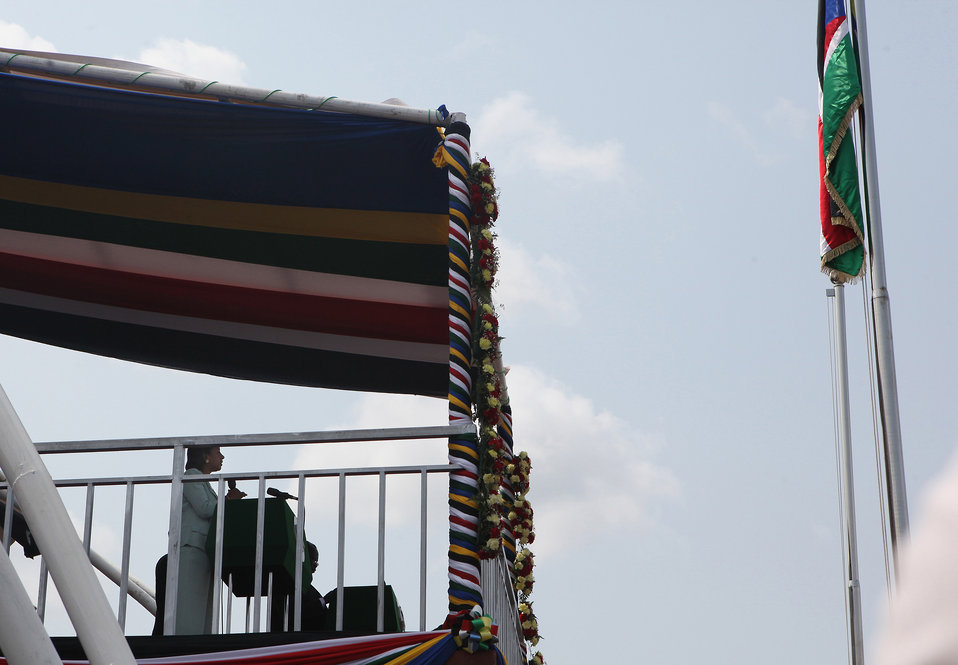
South Sudan Independence Day

Ambassador Susan E. Rice, U.S. Permanent Representative to the United Nations, speaks to a crowd of thousands at the Republic of South Sudan Independence Day celebrations in Juba, South Sudan on July 9, 2011.